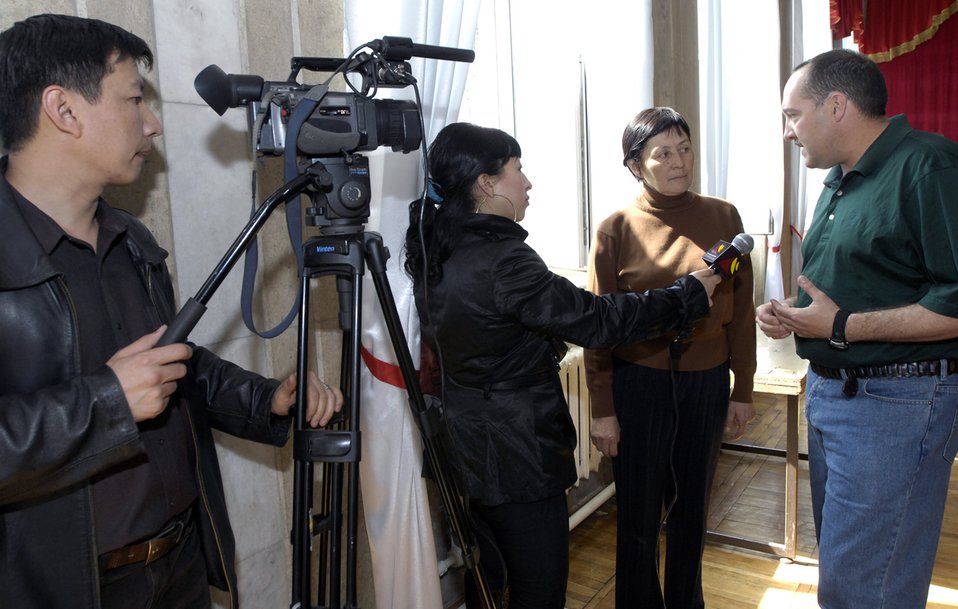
Band members connect with Kyrgyzstan music students

Master Sgt. Dean Smith is interviewed by a Bishkek television station reporter March 26 at the Bishkek College of Music in Kyrgyzstan. Sergeant Smith is the the operations manager for the U.S. Air Forces Central Band Hot Brass. The band performed at the Bishkek College of Music as well other locations off-base during their six-day trip to Kyrgyzstan.